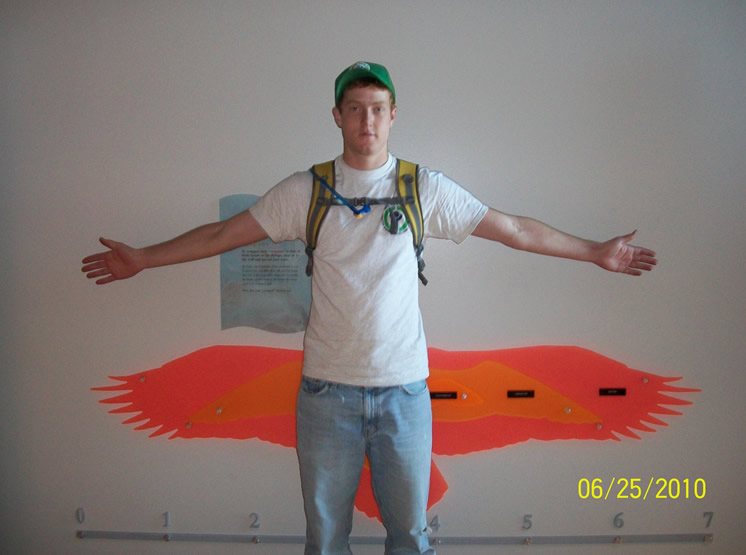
YCC spirit!